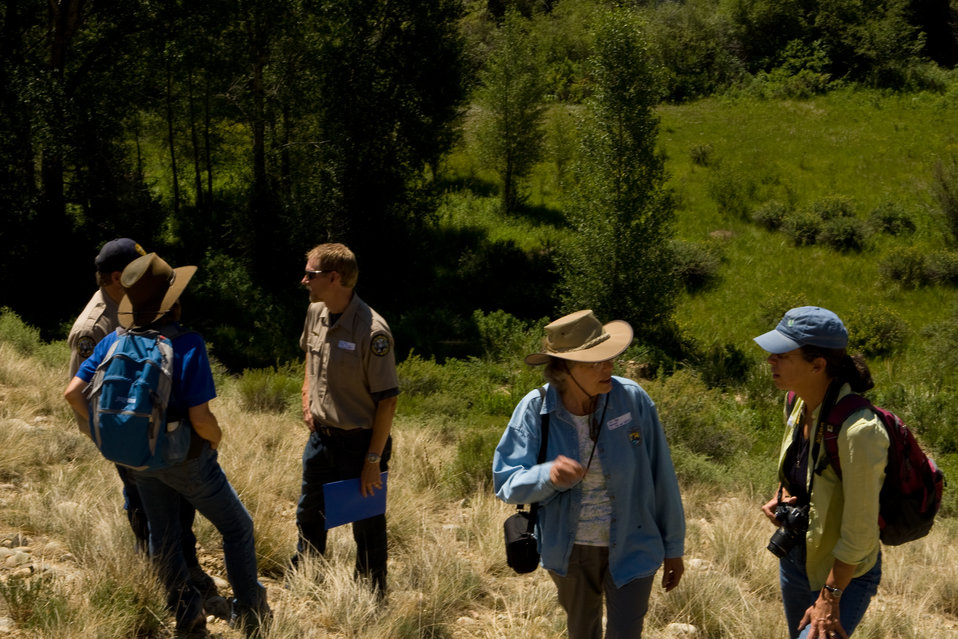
Colorado Rare Plant Conservation Initiative

The Colorado Rare Plant Conservation Initiative (RPCI) is a partnership of 23 statewide and regional agencies, private organizations, and academic institutions working to conserve 121 rare plants in Colorado. As part of these efforts the group developed the Colorado Rare Plant Conservation Strategy, developed Best Management Practices to reduce energy development impacts, addressed climate change, and developed focused strategies for the conservation of individual species at eight priority landscapes. The group has also worked to coordinate volunteer efforts for plant conservation across the state.